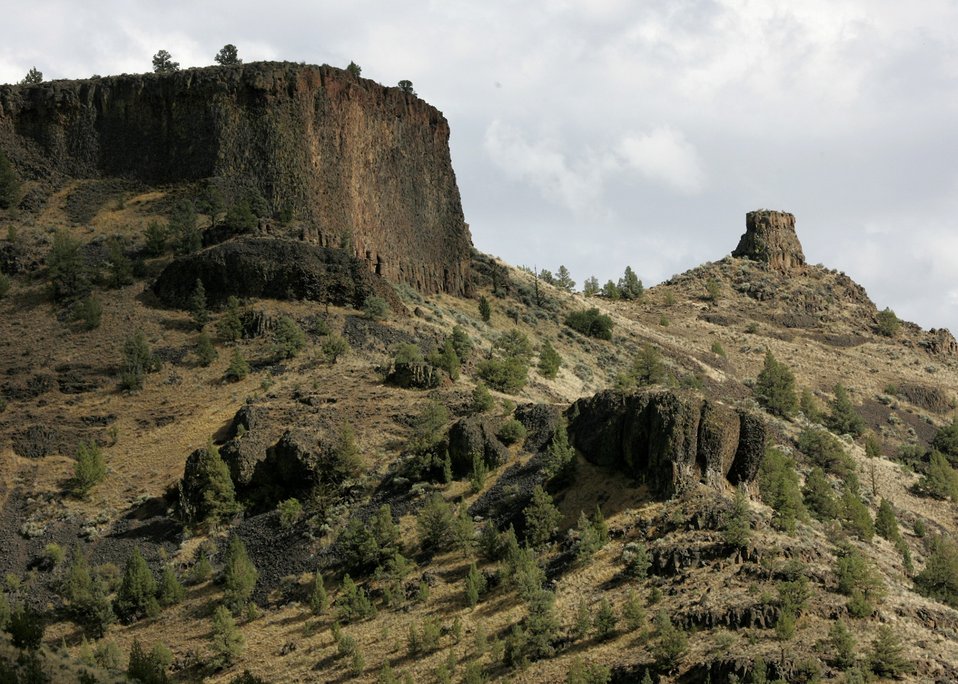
Chimney Rock above the Lower Crooked River Backcountry Byway.